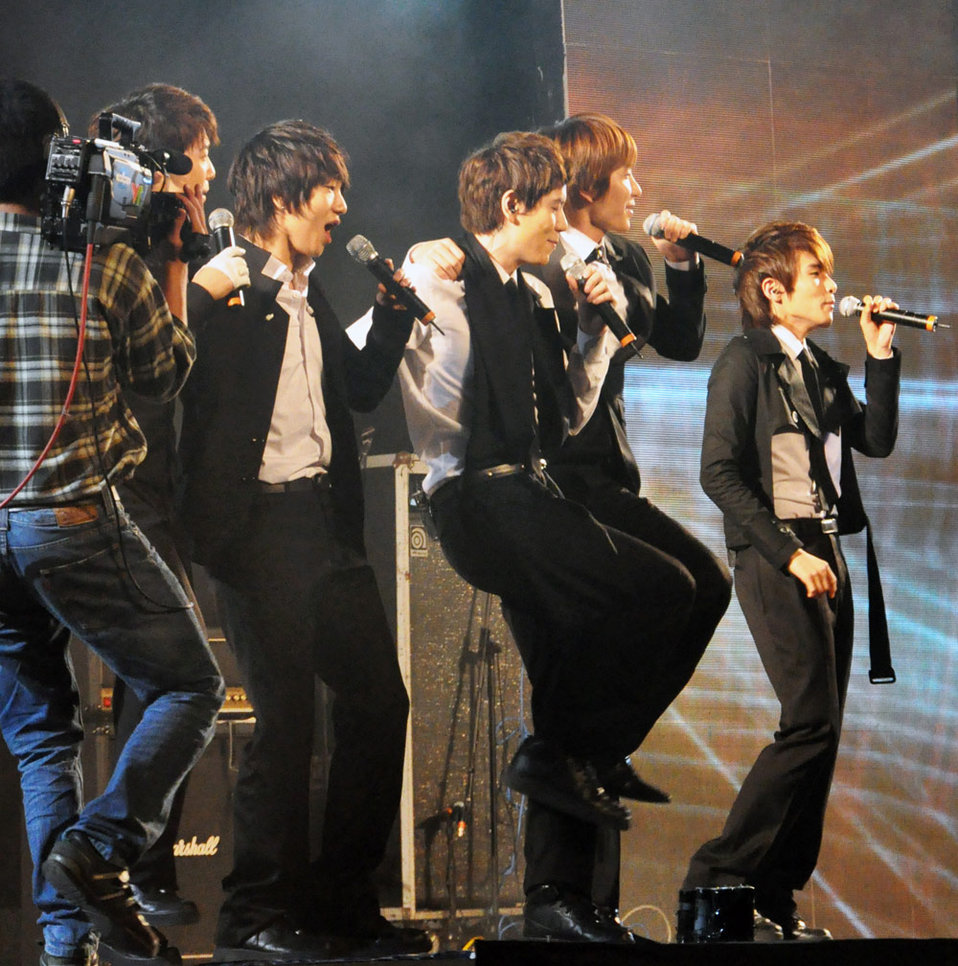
Super Junior performs at the MTV EXIT Hanoi concert March 27, 2010

Super Junior performing in Hanoi.